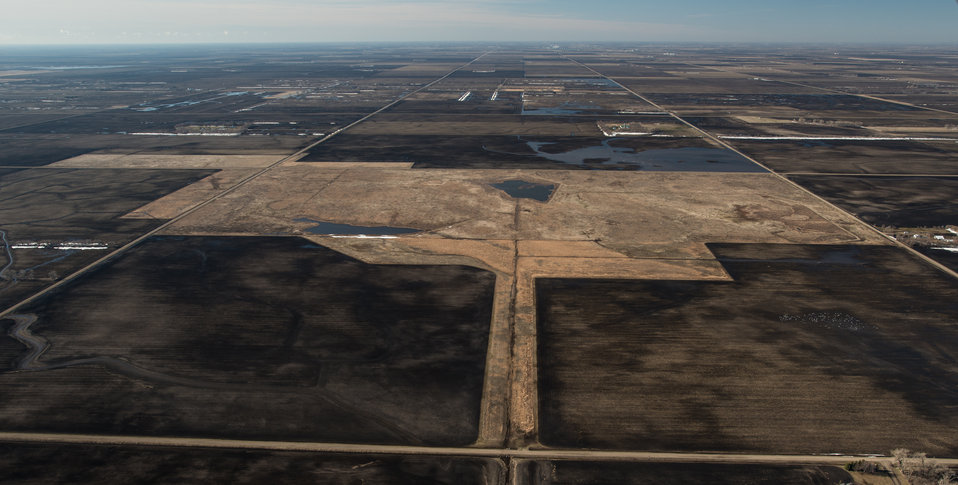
Vertin, U.S. Department of Agriculture (USDA) Natural Resources Conservation Service (NRCS) Wetland Reserve Program (WRP) in Wilkin County, MN, on Tuesday, April 30, 2013. For information about this and other programs from the USDA Red River Basin Initiative (RRBI) please see www.mn.nrcs.usda.gov/news/features13/RRBI.html.